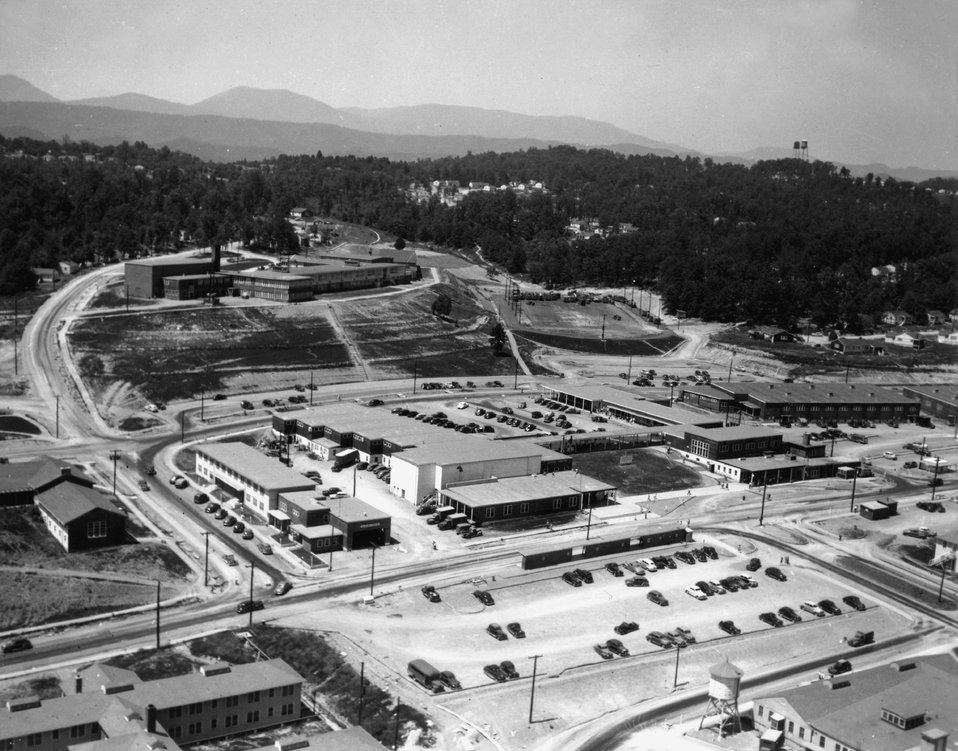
Aerial - Jackson Square and High School. c. 1945